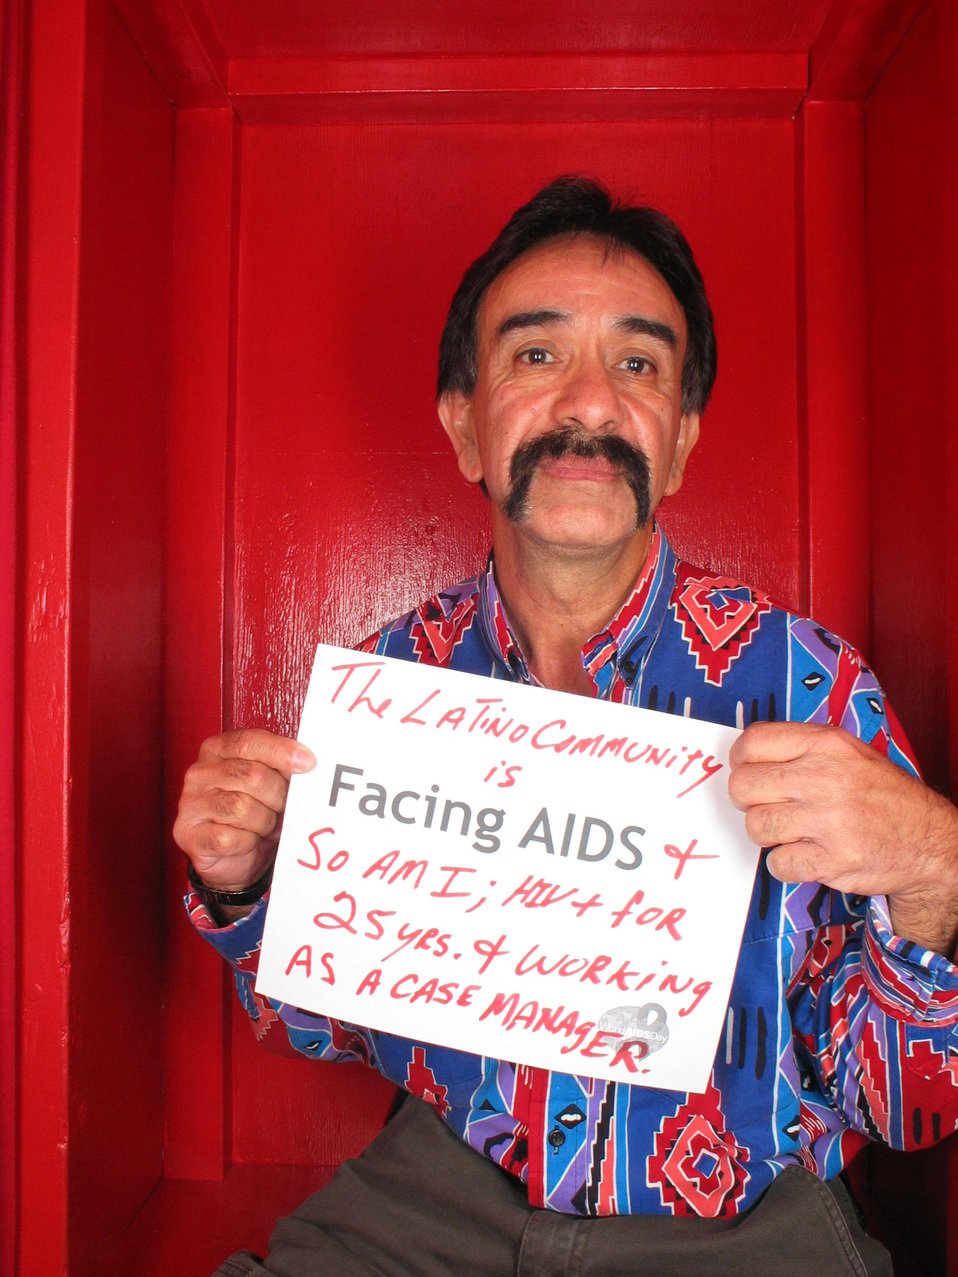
The Latino community is Facing AIDS and so am I; HIV for 25 years and working as a case manager.